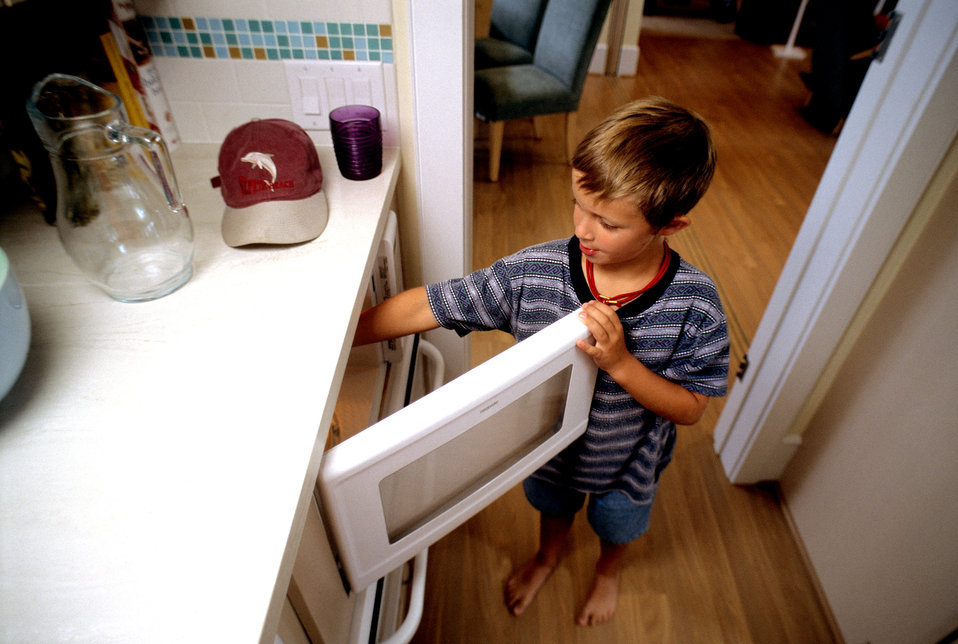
This was one of two images (see PHIL 9386), showing a young boy who was using a microwave oven that had been installed beneath a kitchen countertop. Installed at this level, it was easily accessible by shorter individuals, people who use wheelchairs, and as was the case here, children. This might be part of a universal array if another microwave were installed higher for other users.